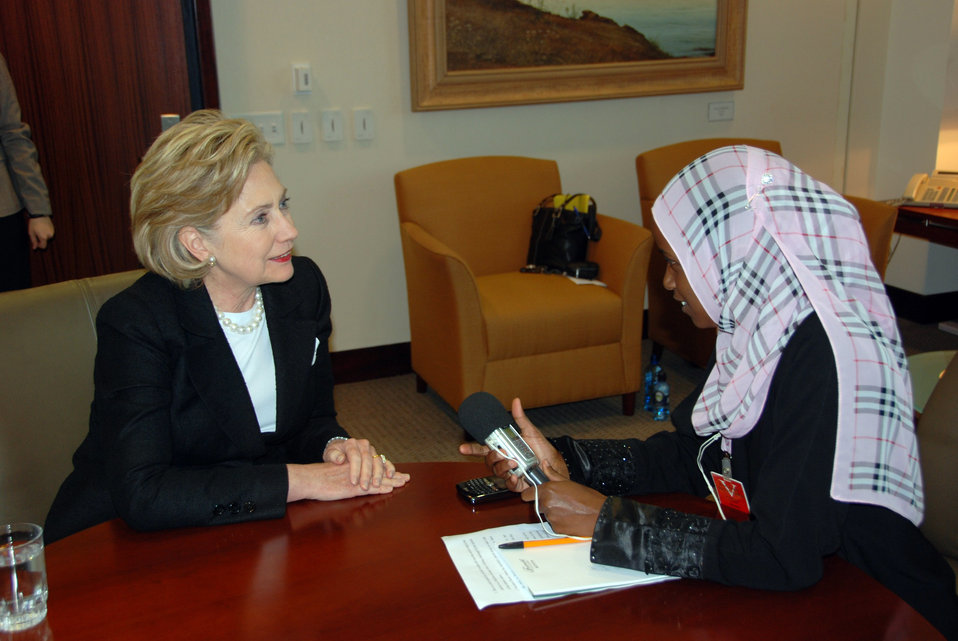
Secretary Clinton Press Interviews in Kenya

U.S. Secretary of State Hillary Rodham Clinton participates in local press interviews in Nairobi, Kenya August 6, 2009.